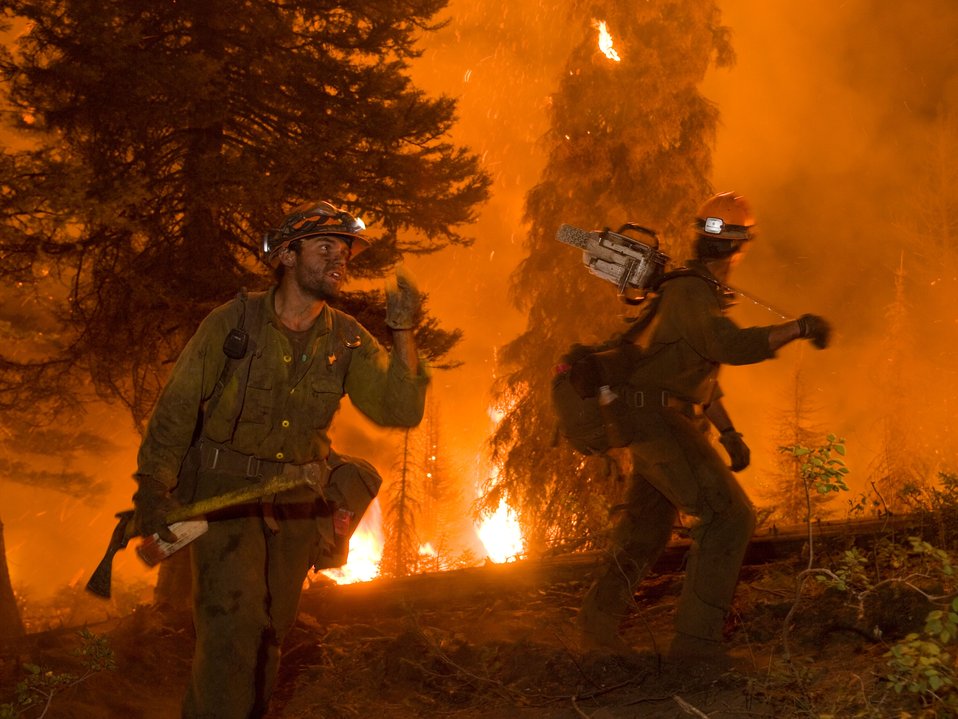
hotshots

Two members of the Idaho City Hotshots work on the Springs Fire on the Boise National Forest, August, 2012. Hotshot crews are the best of the best of wildland fire fighters. They have been extensively trained to fight fires in remote areas with little or no logistical support in the most demanding conditions.